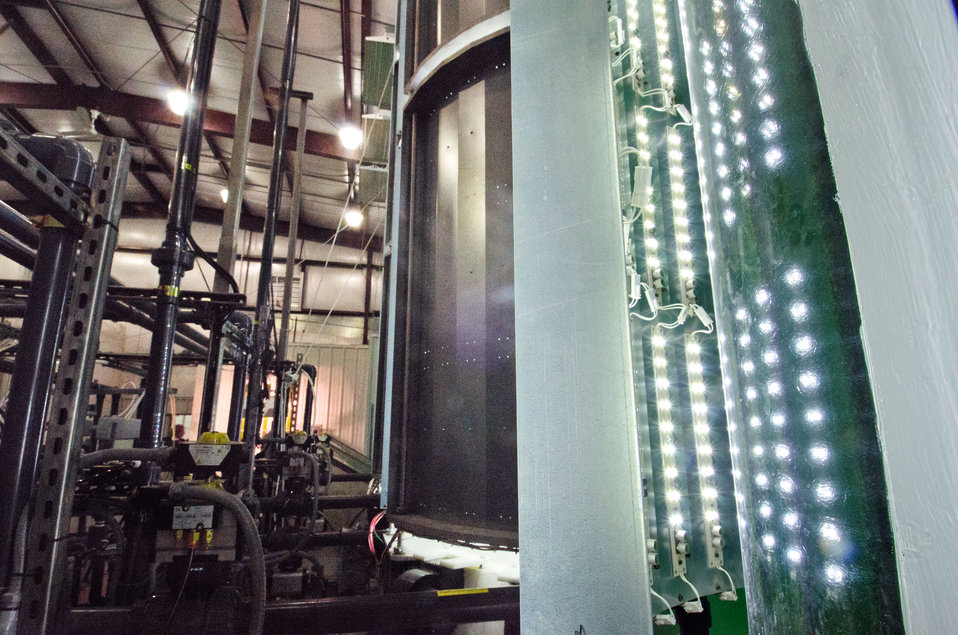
Phase II of the BioProcess Algae facility at Green Plains Renewable Energy (GPRE), Inc. on Friday, April 15, 2011 in Shenandoah, IA. Phase II is key component in the commercial scale photo bioreactors/harvesters. The operation is co-located within GPRE’s ethanol factory where BioProcess Algae technology is used to treat waste products; carbon dioxide, recycled heat and water to mass-produce algae. Algae from this facility are used for animal feeds, pharmaceutical and beauty products.